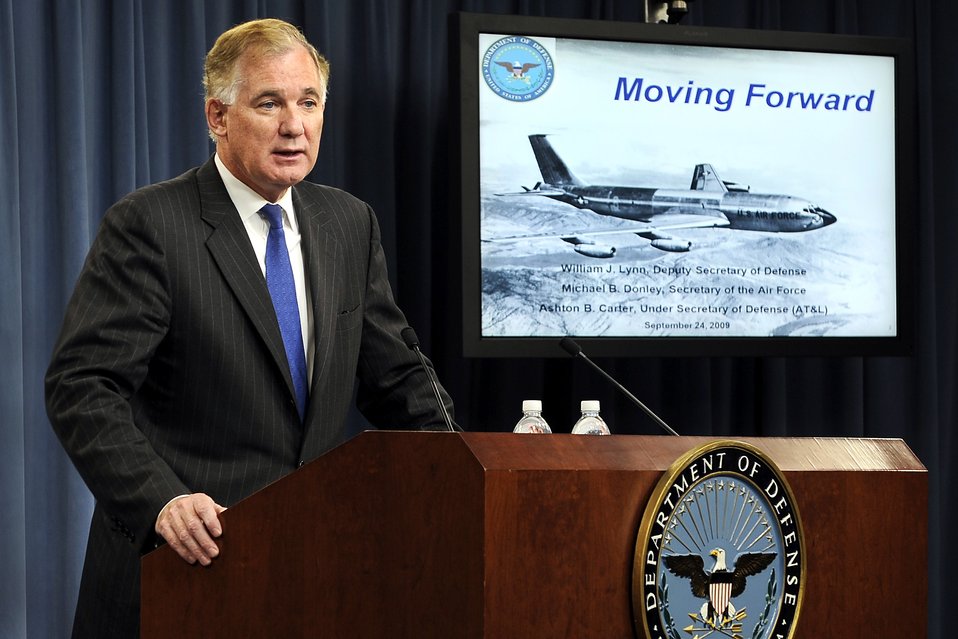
DOD officials announce requirement for new aerial tanker competition

Deputy Secretary of Defense William Lynn, speaks with members of the press about the Air Force KC-X aerial tanker program during a press conference with Secretary of the Air Force Michael Donley and Under Secretary of Defense for Acquisition Technology and Logistics Ashton Carter at the Pentagon, Sept. 24, 2009.